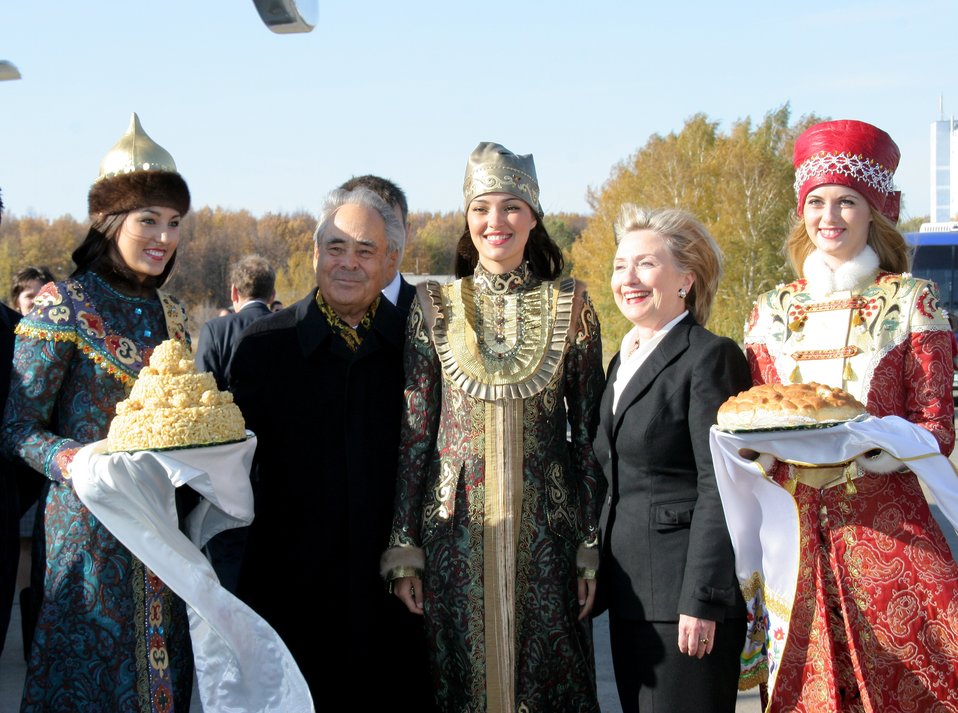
Secretary Clinton With Tatarstan President Mintimer Shaimiev

U.S. Secretary of State Hillary Rodham Clinton and Tatarstan President Mintimer Shaimiev pose with participants from a traditional welcoming ceremony in Kazan, Russia October 14, 2009.